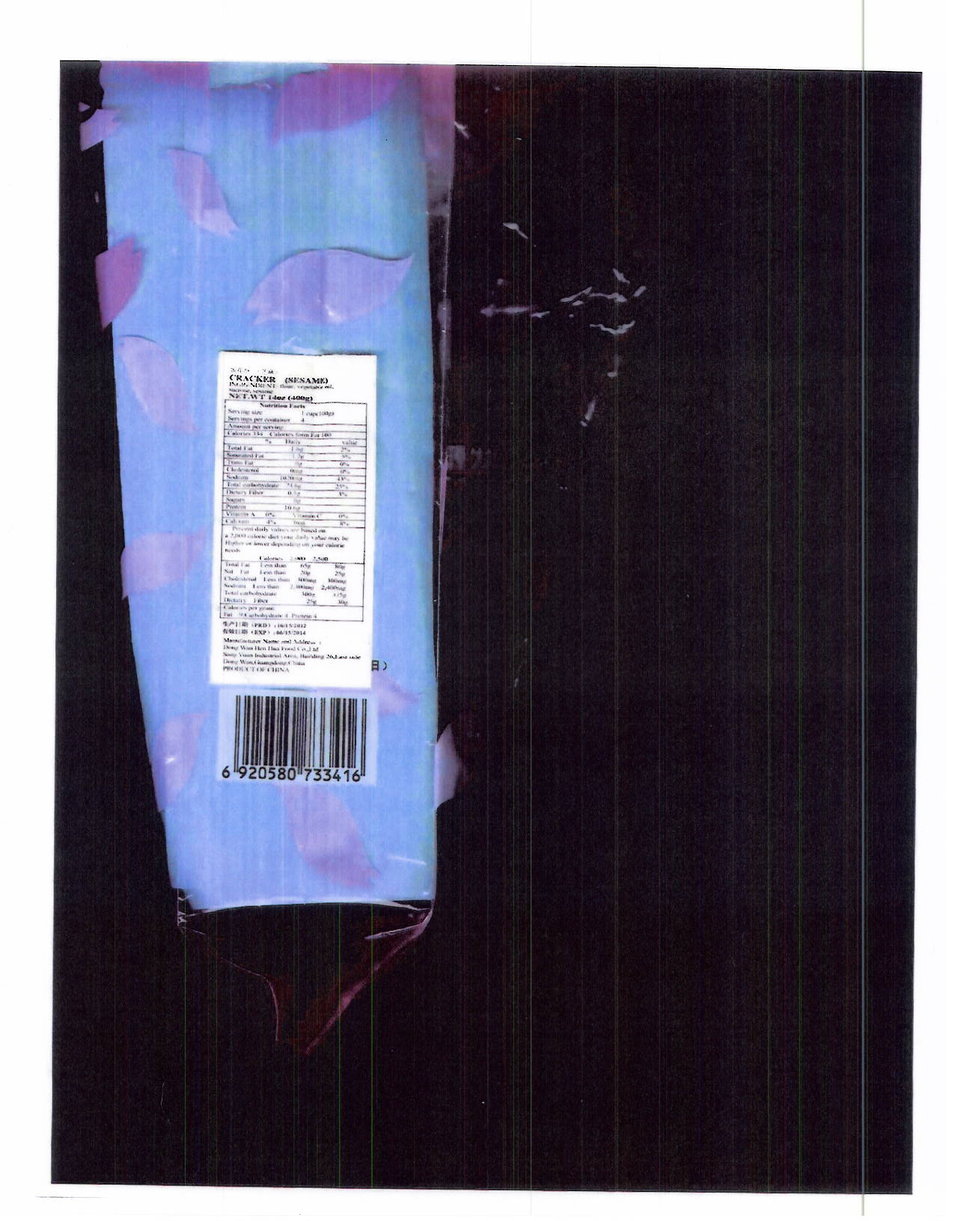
RECALLED - YF Sesame Flavor Cracker

April 11, 2014 - Product Recall - Domega NY International Co LTD Issues Allergy Alert On Undeclared Peanuts In YF Sesame Flavor Cracker.